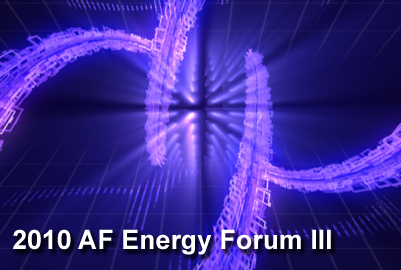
2010 Air Force Energy Forum III

The 2010 Air Force Energy Forum III will focus on the service's most pressing energy issues and is scheduled for May 27 through 28 in Washington, D.C.